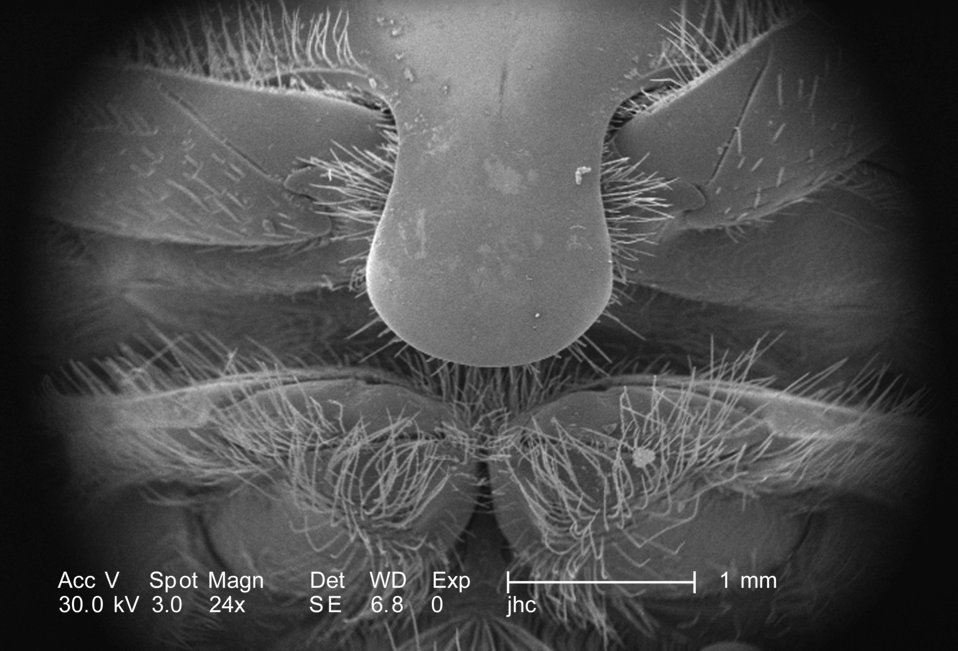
Under a low magnification of only 24x, this scanning electron micrograph (SEM) depicted some of the anatomical relationships found on the ventral surface of this adult 'figeater' beetle's, Cotinis mutabilis thorax, which is the body region situated between the insect's head and abdomen. In this particular view, two of the three pairs of legs may be seen emanating adjacent to the 'prosternal process', which is a posterior extension of the sternum. The insect leg is comprised of a variable number of segments, however, there are usually six which predominate, including the most proximal, i.e., attaching the leg to the thorax, coxa, followed by the trochanter, femur, tibia, tarsus, and pretarsus, which in the case of this beetle is a claw, well visualized in PHIL 9943, 9944, and 9945.